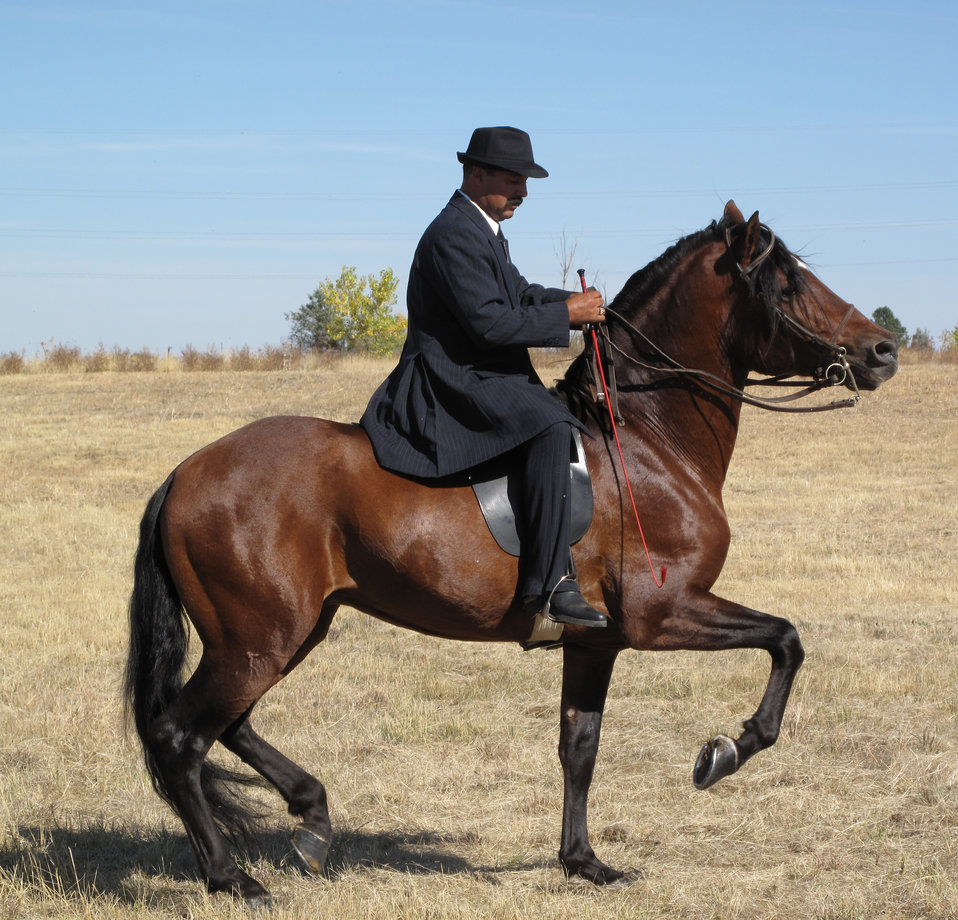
Refuge Round-up 2010

Jose and his dancing horses perform at the Refuge Round-Up.